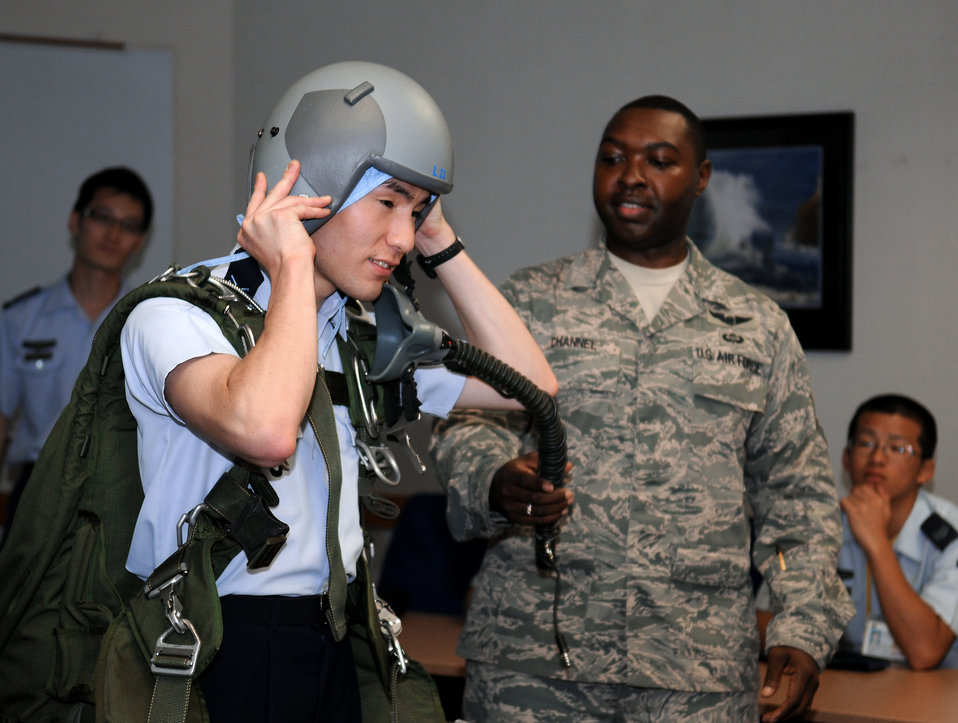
Kadena conducts bilateral cultural exchange

Master Sgt. Salem Channel shows a visiting enlisted Japan Air Self Defense Force member how to fit a helmet as part of the bilateral exchange program at Kadena Air Base, Japan. Sergeant Channel is with the physiology operations element at the 18th Aerospace Medical Squadron.